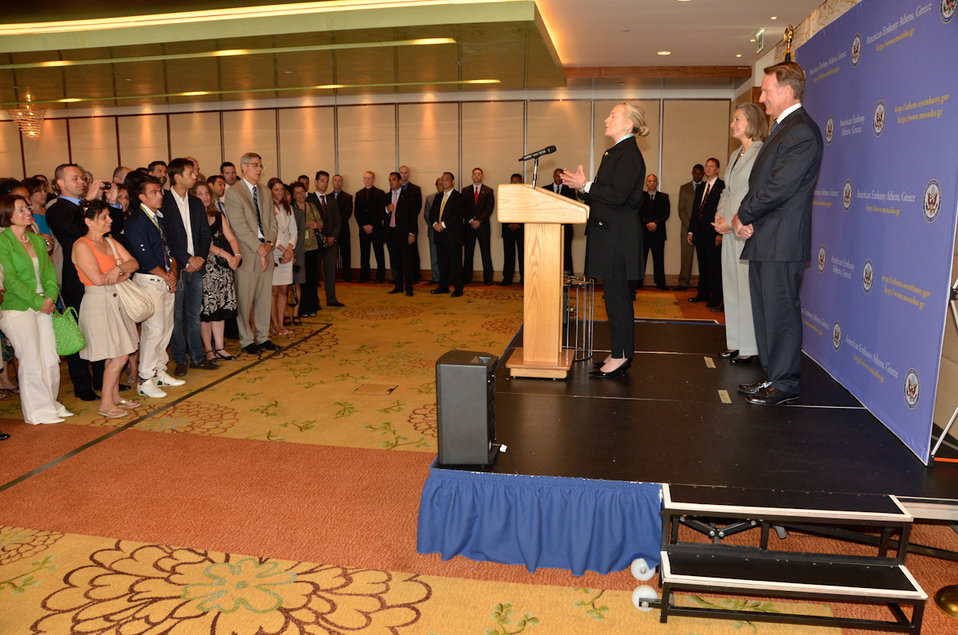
Secretary Clinton Speaks With Embassy Athens Staff and Families

U.S. Secretary of State Hillary Rodham Clinton speaks with Embassy Athens staff and families in Athens, Greece, on July 18, 2011. U.S. Ambassador to Greece Daniel B. Smith is pictured behind the Secretary.